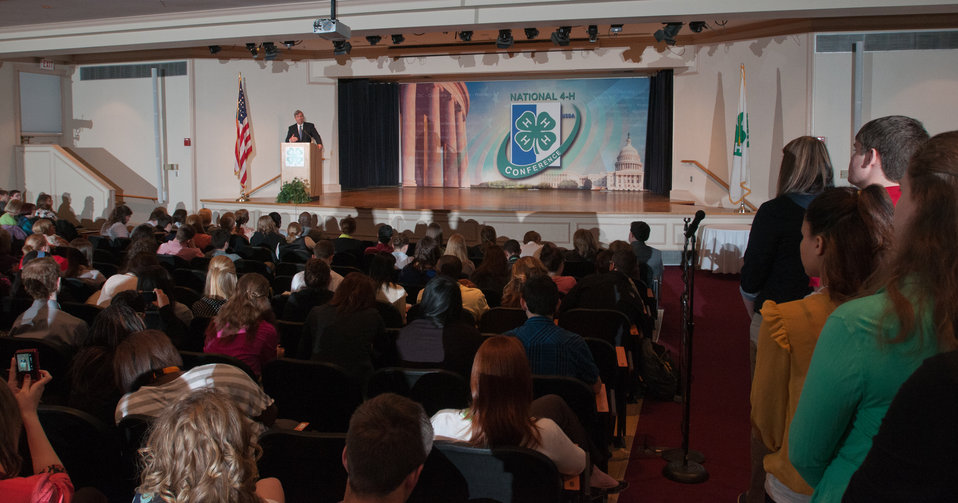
U.S. Department of Agriculture (USDA) Secretary Tom Vilsack takes questions from youth members lined up at microphones, during the 2013 National 4-H Conference, on Monday, April 8, 2013 in Chevy Chase, MD. Also speaking at the event is Agriculture Departmental Management Office of Advocacy and Outreach Director Carolyn Parker and National Institute of Food and Agriculture Director Dr. Sonny Ramaswamy. These 4-H youth members are in grades 10-12 (15-19 years old).